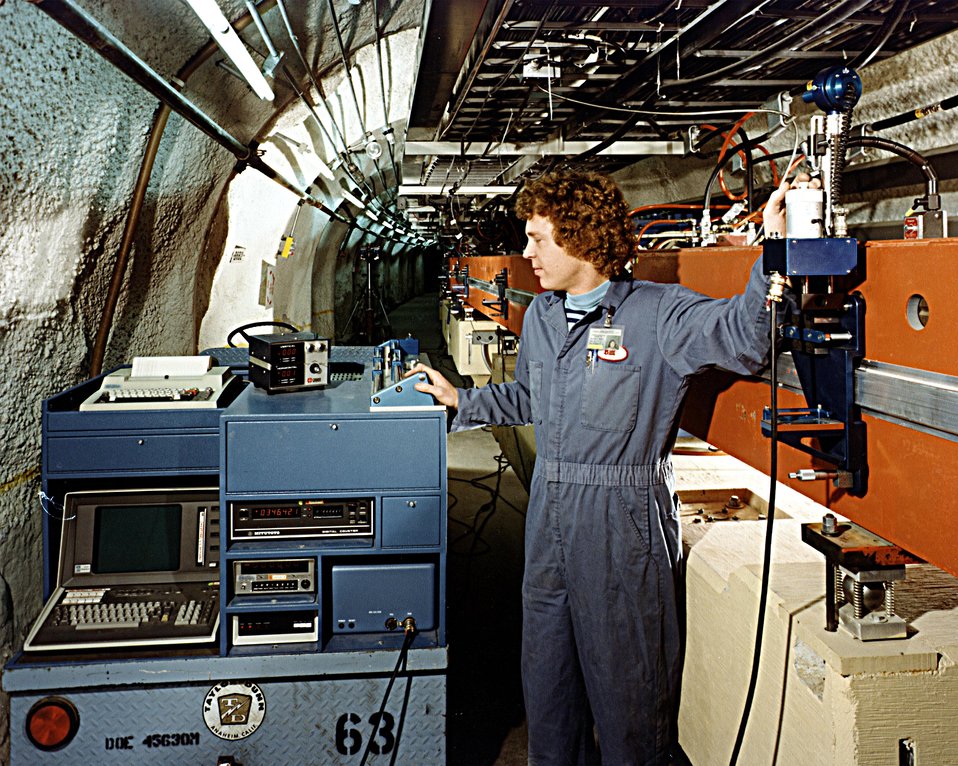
TECHNICIAN IS USING A SMALL AUTOMATIC MICROMETER TO MEASURE VERTICAL DISTANCE FROM A MAGNET TO A LASER BEAM.

THE POSITRON-ELECTRON PROJECT (PEP) IS A JOINT UNDERTAKING OF STANFORD LINEAR ACCELERATOR CENTER (SLAC) AND THE LAWRENCE BERKELEY LABORATORY (LBL). THE PEP MACHINE IS DESIGNED TO STORE BEAMS OF ELECTRONS AND POSITRONS CIRCULATING IN OPPOSITE DIRECTIONS AT SINGLE-BEAM ENERGIES BETWEEN 4 GEV AND 18 GEV. THE SOURCE OF THE BEAMS WILL BE THE PRESENT SLAC ACCELERATOR. THE COUNTER ROTATING BEAMS OF ELECTRONS AND POSITRONS WILL COLLIDE WITH EACH OTHER AT SIX POINTS IN THE MACHINE. THESE COLLISION OR BEAM-INTERACTION POINTS WILL BE USED FOR HIGH-ENERGY PHYSICS EXPERIMENTS.